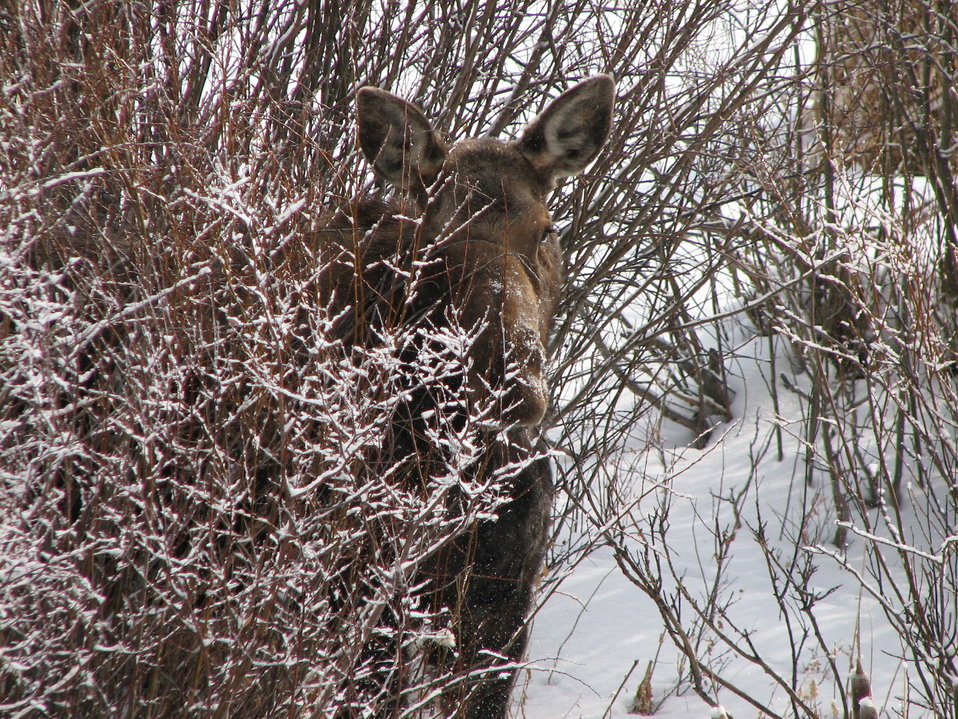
In the Cover of Willows

Moose sometimes visit the wetlands area around the visitor center at the National Elk Refuge.